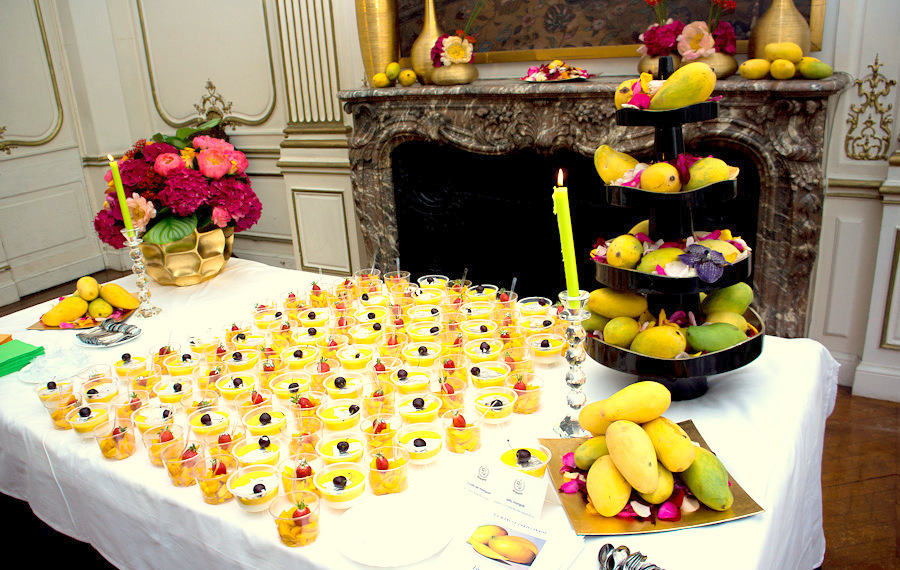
Celebrating Pakistani Mangoes in France

France, July 3, 2013: Desserts and cocktails prepared from Pakistani mangoes delighted the guests representing the French business community, including representatives from global retail store chains such as Carrefour, Dole and Ashaun and other major buyers and importers.